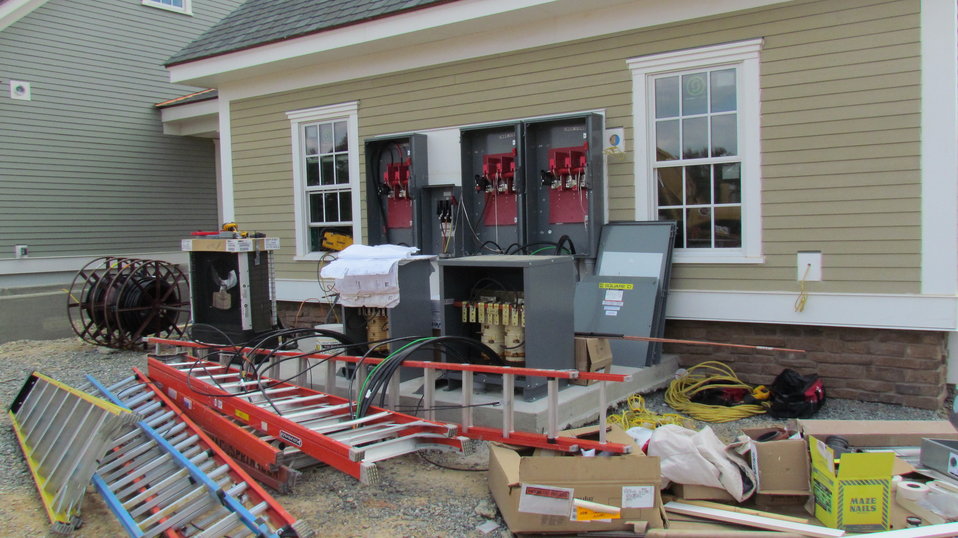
Switch gear being installed behind garage of NZERTF facility. This electrical equipment was necessary to convert the electrical power that was available at the NIST site to nominal 240 volt single-phase power that is normally available to residences in the United States.